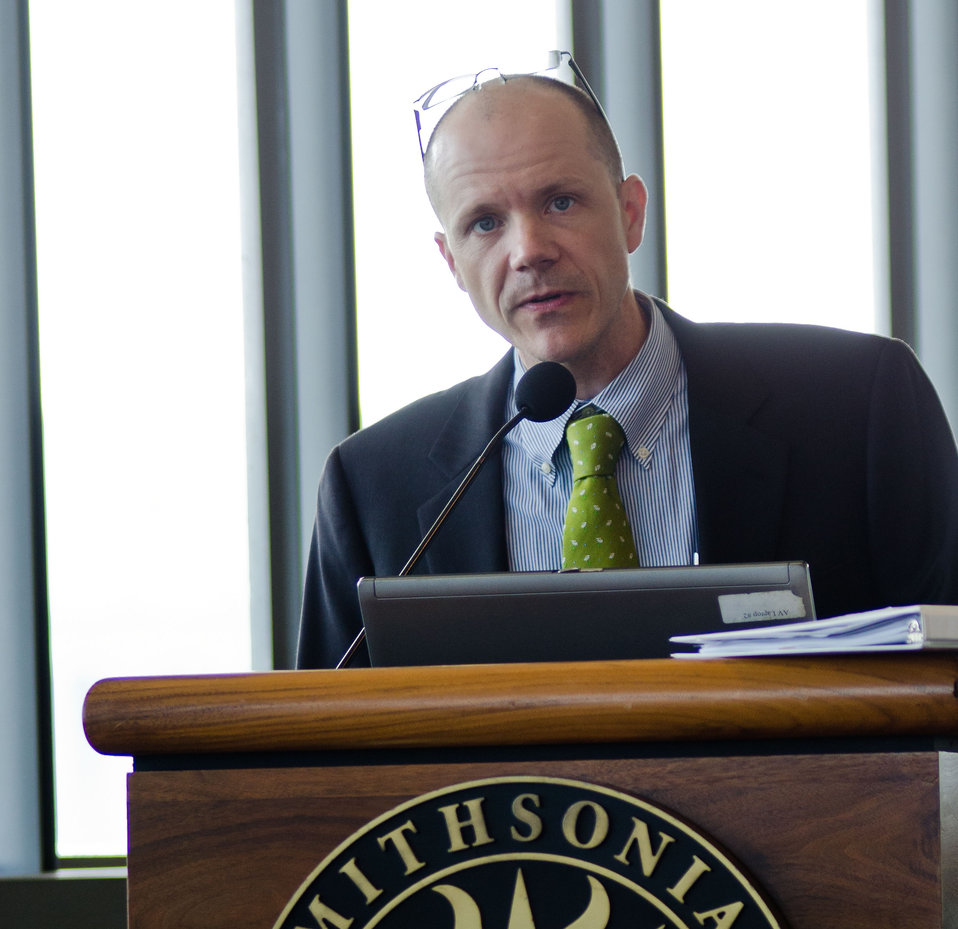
U.S. Department of Agriculture (USDA) Rural Development (RD) Deputy Under Secretary Doug O'Brien listens to a question during the public first business meeting of USDA’s Council for Native American Farming and Ranching (CNAFR) held at the National Museum of the American Indian in Washington, D.C. on Tuesday, Aug. 14, 2012. CNAFR was created to advise the Secretary on ways to eliminate barriers to participation for Native American Farmers and Ranchers in USDA programs. The Council was established as part of the Keepseagle settlement, and is conducted under the oversight of USDA's Office of Tribal Relations under the Office of the Secretary of Agriculture.